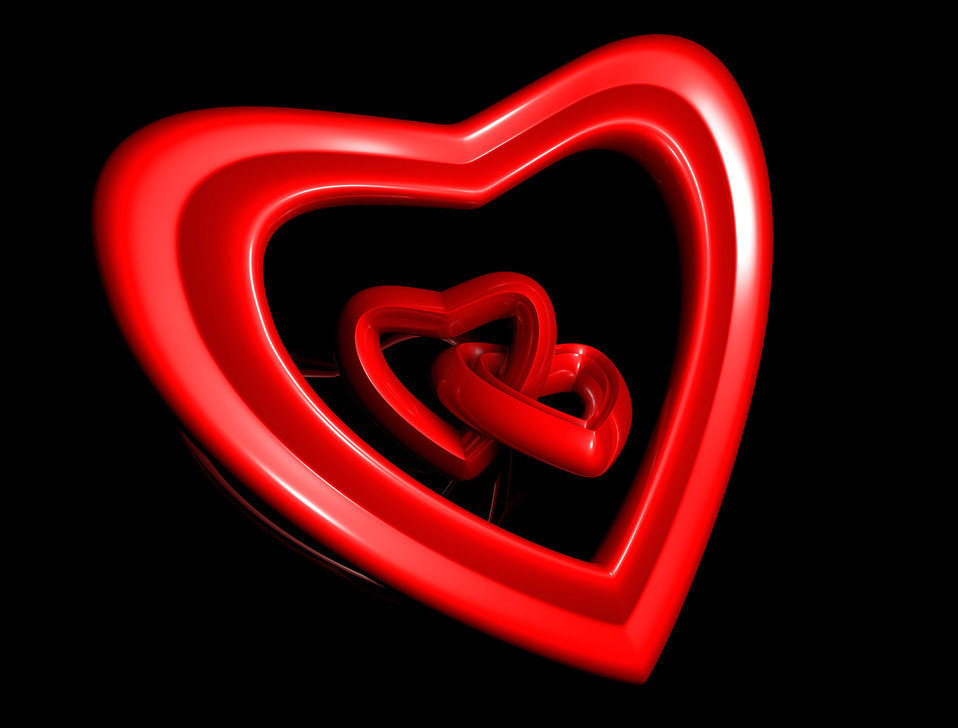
Red heart

Two hearts in one.